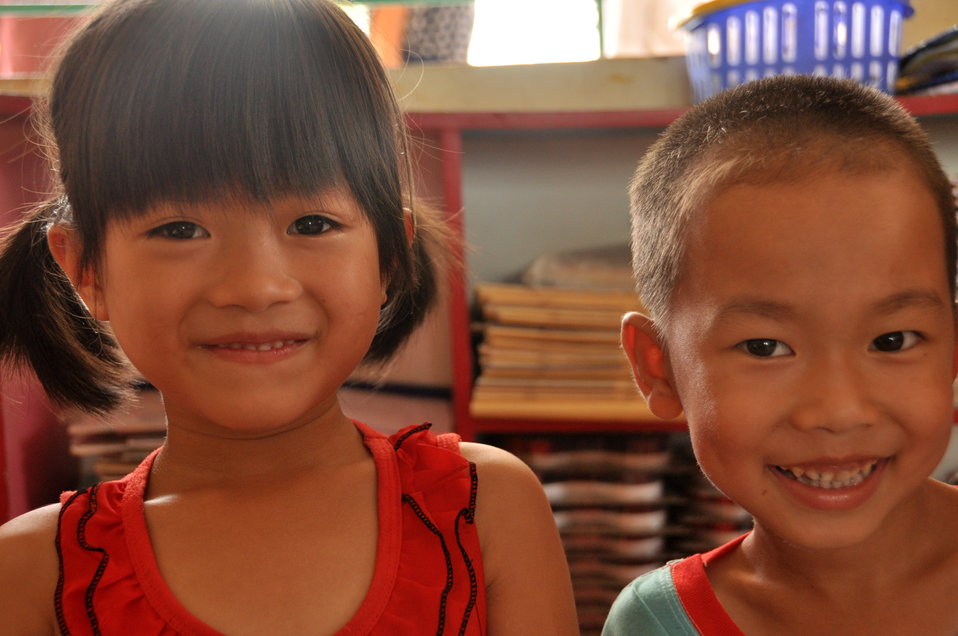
USAID Delivers Deworming Medication to Kindergartners in Nam Dinh Province

Children of Vietnam's Nam Dinh Province receive deworming medicine in a program supported by USAID and World Vision Australia.
June 1, 2013